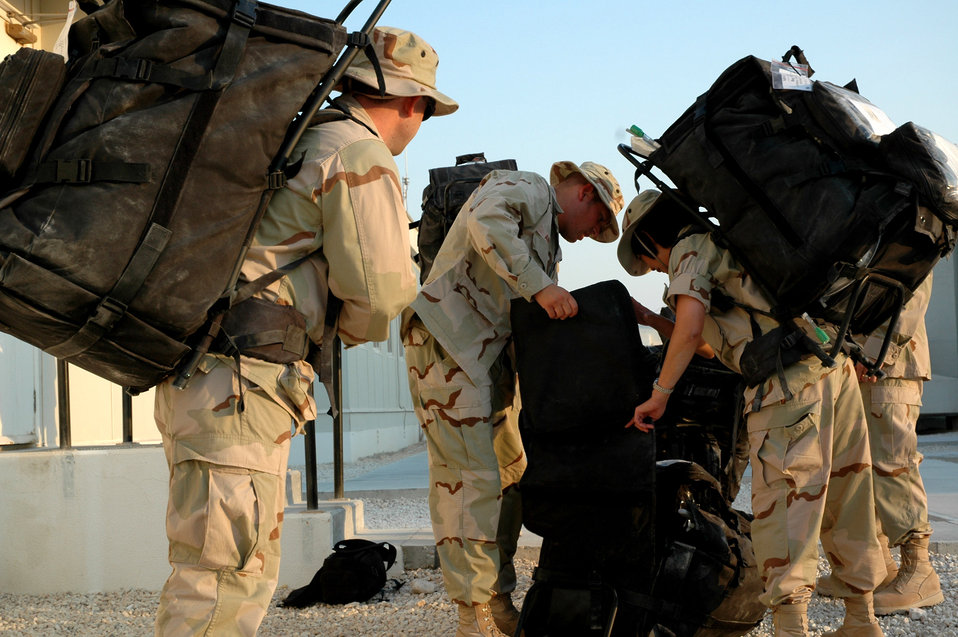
Operation Enduring Freedom

SOUTHWEST ASIA -- A mobile forward surgical teams